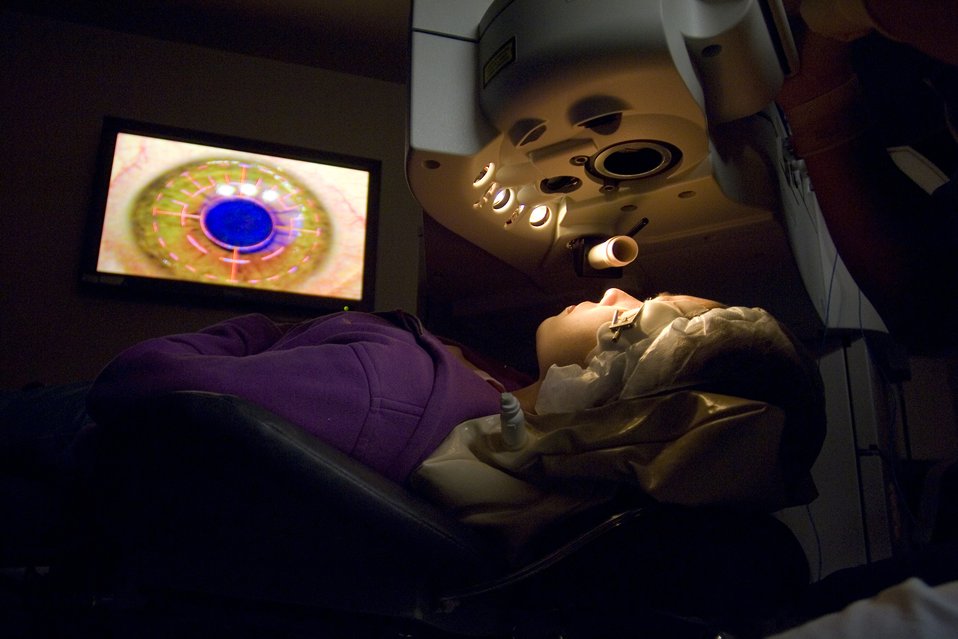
Better looking every day

Lt. Col. Charles Reilly performs Epi-LASIK surgery on Capt. Ruth Brenner Dec. 19 at the Wilford Hall Refractive Surgery Center at Lackland Air Force Base, Texas. The center has openings most every day for surgery and has some of the most advanced equipment in the world for performing refractive surgeries.